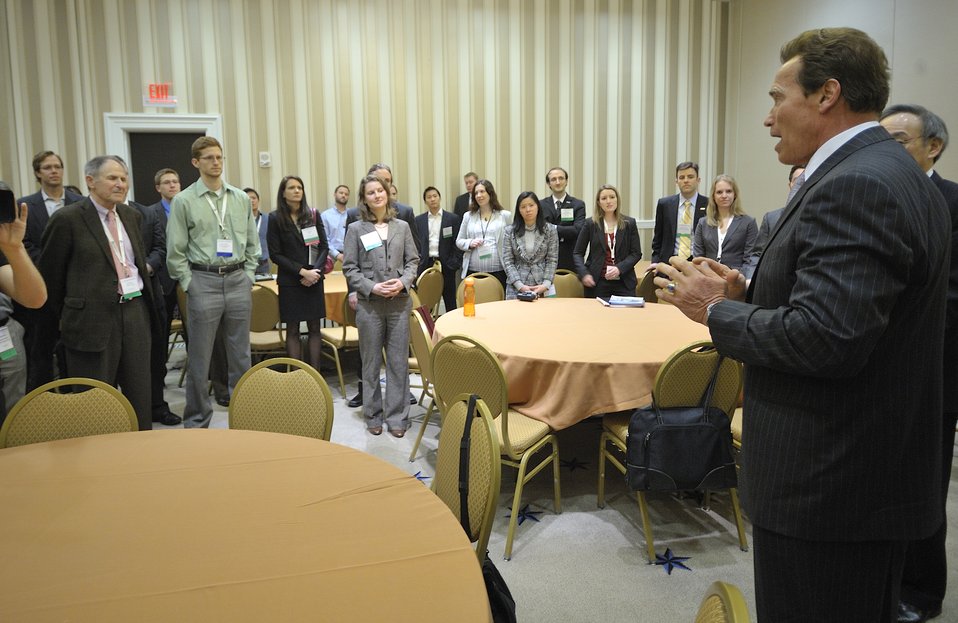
ARPA-E Energy Innovation Summit 2011, 12 of 83

Steven Chu, Secretary, United States Department of Energy and Arnold Schwarzenegger, Former Governor of California surprise graduate students who traveled to the summit.